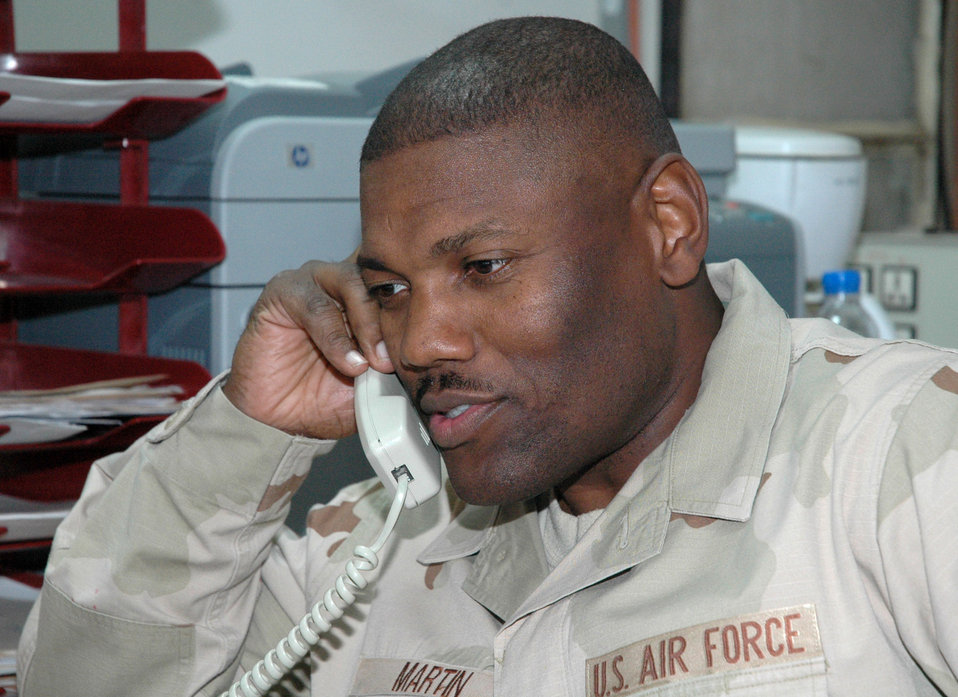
NCO receives phone call from president

Master Sgt. Stonie Martin talks with President George W. Bush Nov 23. Sergeant Martin was one of two Air Force people to get a call from the commander in chief Thanksgiving Day. He is assigned to the 506th Expeditionary Contracting Directorate.